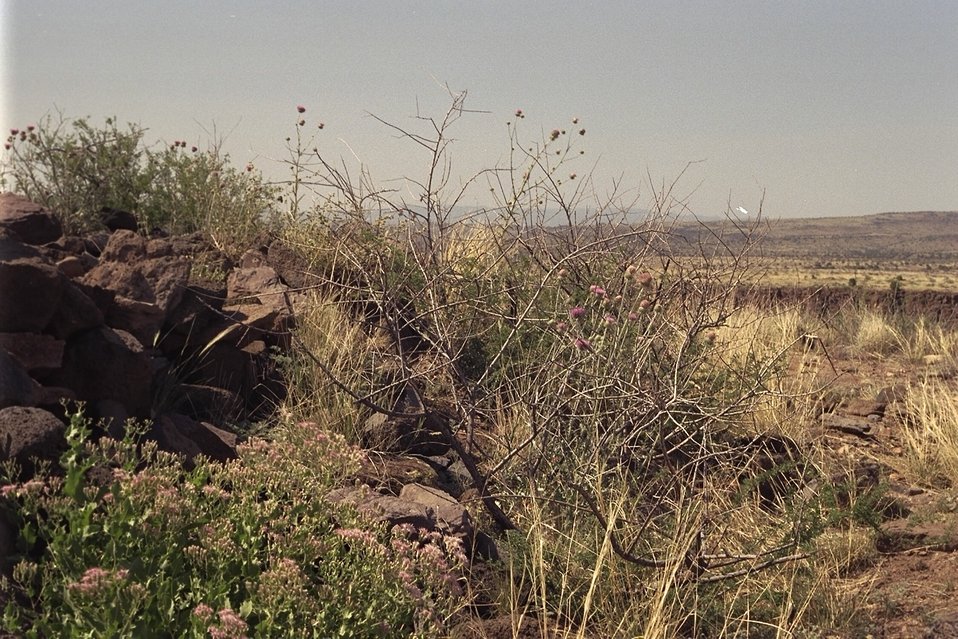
Agua Fria National Monument Area.